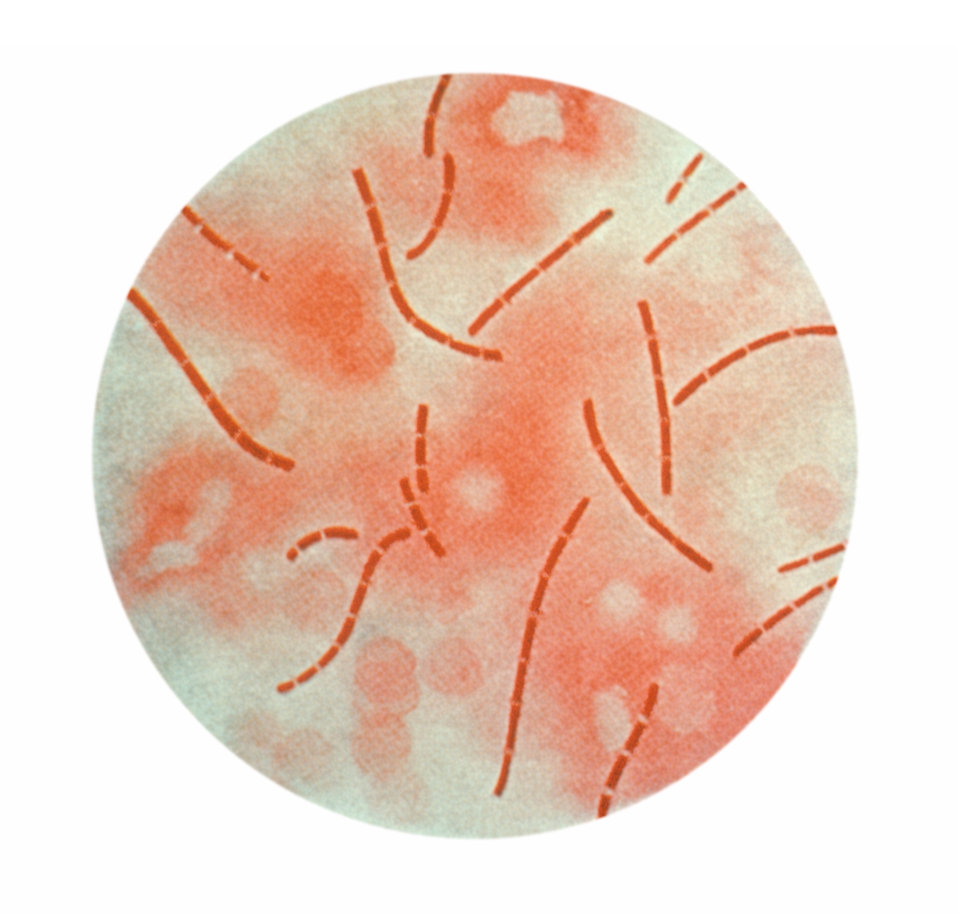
A photomicrograph of Bacillus anthracis bacteria taken from heart blood, and using Carbol Fuchsin stain.